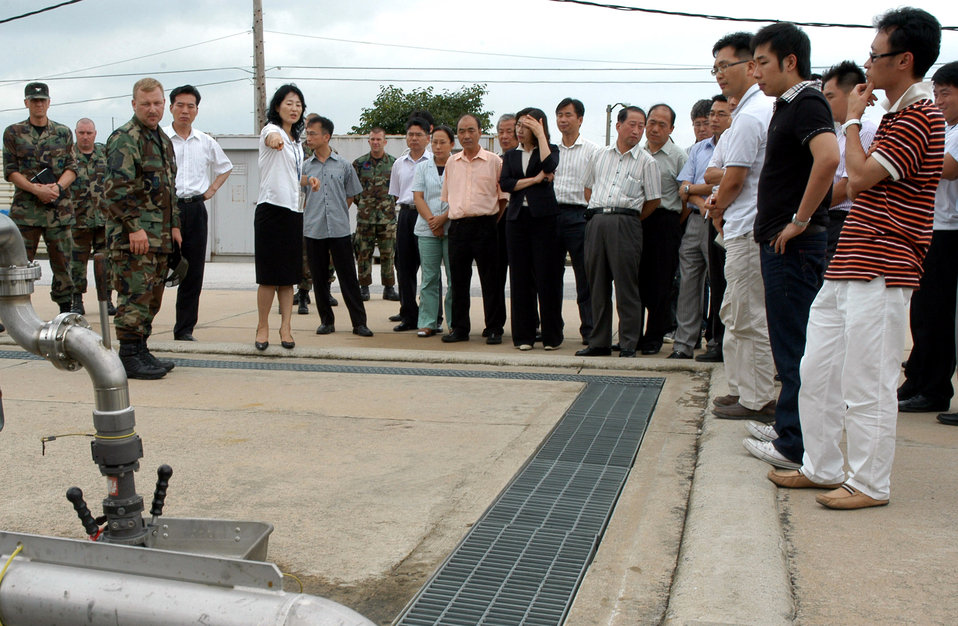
Kunsan officials hold environmental orientation

Master Sgt. Daniel Drain briefs on base fueling systems while Rosemary Song translates to Gunsan City officials Aug. 29 at Kunsan Air Base, South Korea. The purpose of the tour was to educate local community city officials on the base's mission and environmental awareness. Sergeant Drain is the 8th Logistics Readiness Squadron NCO in charge of fixed facilities. Ms. Song is the 8th Fighter Wing Public Affairs chief of community relations.